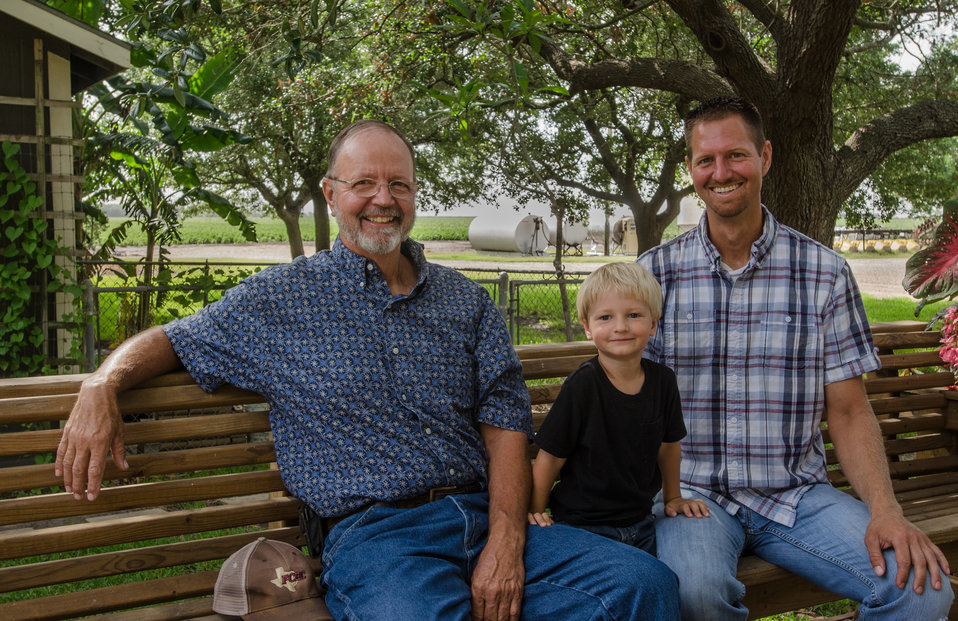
3 generations of the Popp (pronounced Pope) family sit on bench on the Popp Farms 05 in El Campo, TX on Jun. 20, 2013. (father Cedric, Hayden (2), and son Michael) The 2,400 acres of farmland grows cotton (seen in background fields) and milo ((grain sorghum) and are part of the United Agricultural Cooperative, Incorporated.